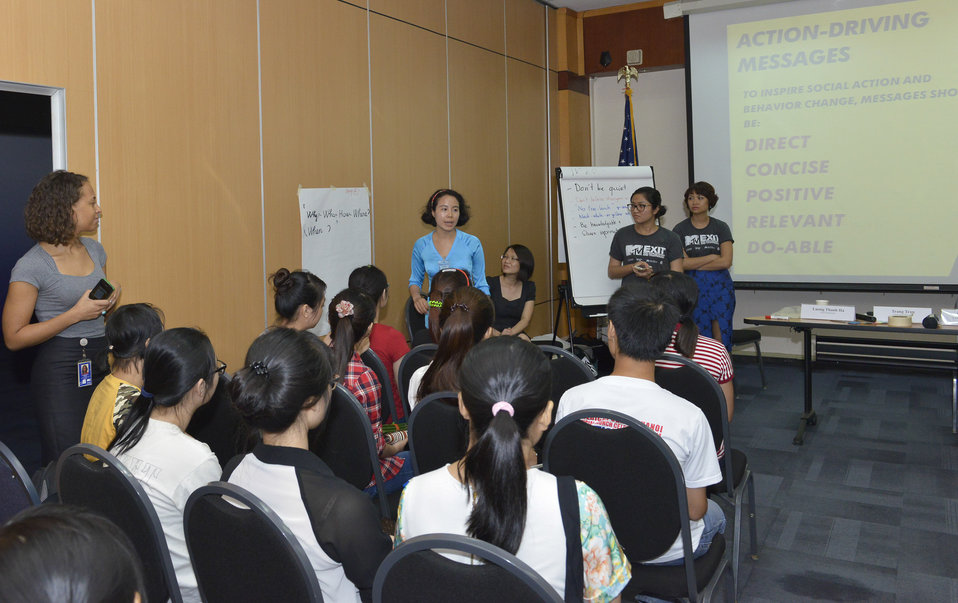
MTV Exit Talk to Engage Students in the Fight against Human Trafficking

Hanoi. June 5, 2014.